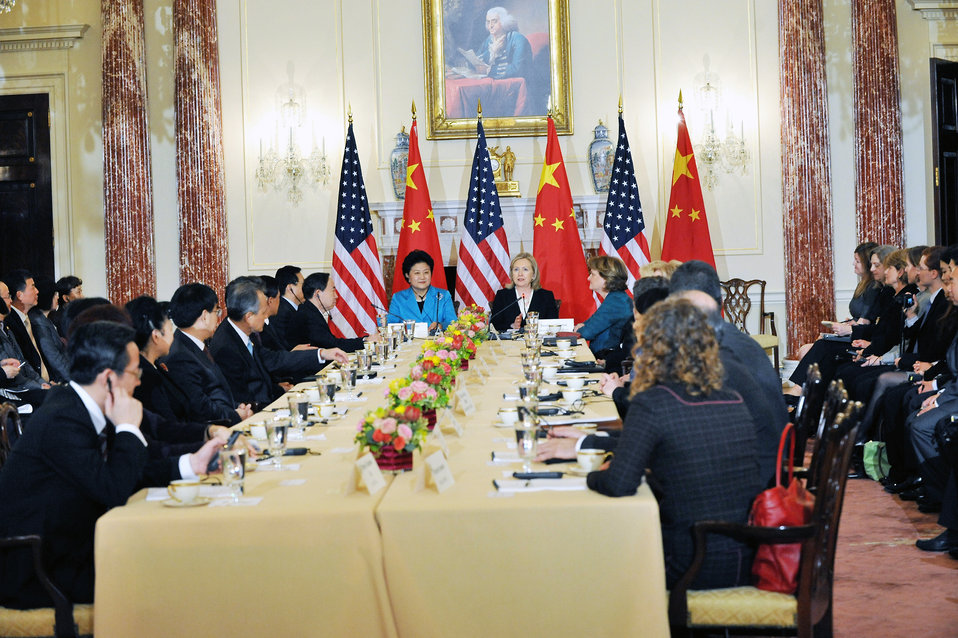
Secretary Clinton Shakes Hands Co-Chairs Closing Session With Chinese State Councilor Liu Yandong

U.S. Secretary of State Hillary Rodham Clinton, with Chinese State Councilor Liu Yandong, co-chairs the closing session of the U.S.-China Consultation on People-to-People Exchange, at the U.S. Department of State in Washington, D.C., on April 12, 2011.